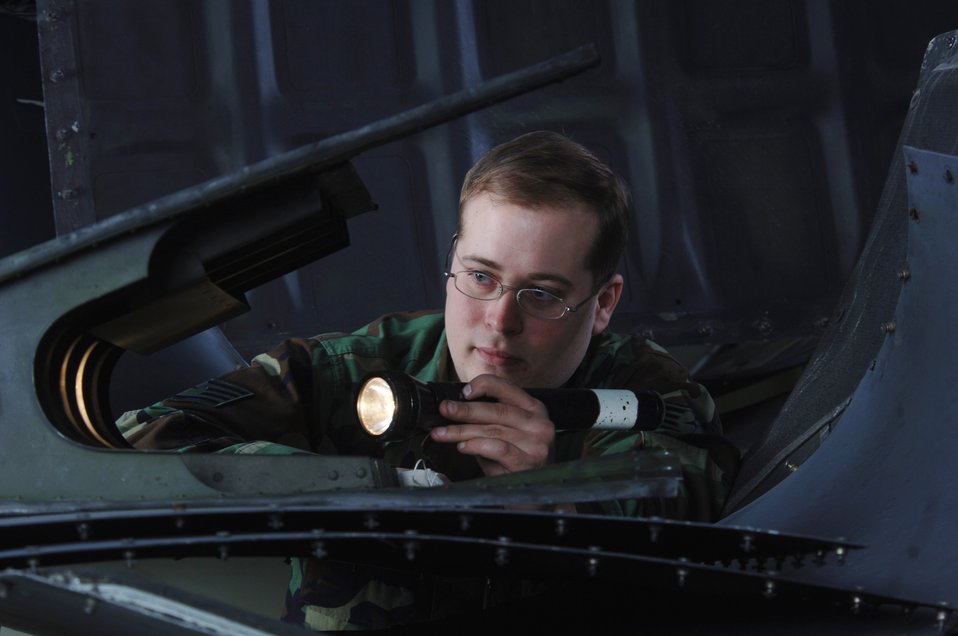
Herc check-up

Staff Sgt. Jason Barefield uses a flashlight to look for corrosion, deformities and broken rivets on a C-130 Hercules wing panel during an inspection at Yokota Air Base, Japan, on Tuesday, April 25, 2006. Sergeant Barefield is an aircraft mechanic assigned to the 374th Maintenance Squadron.